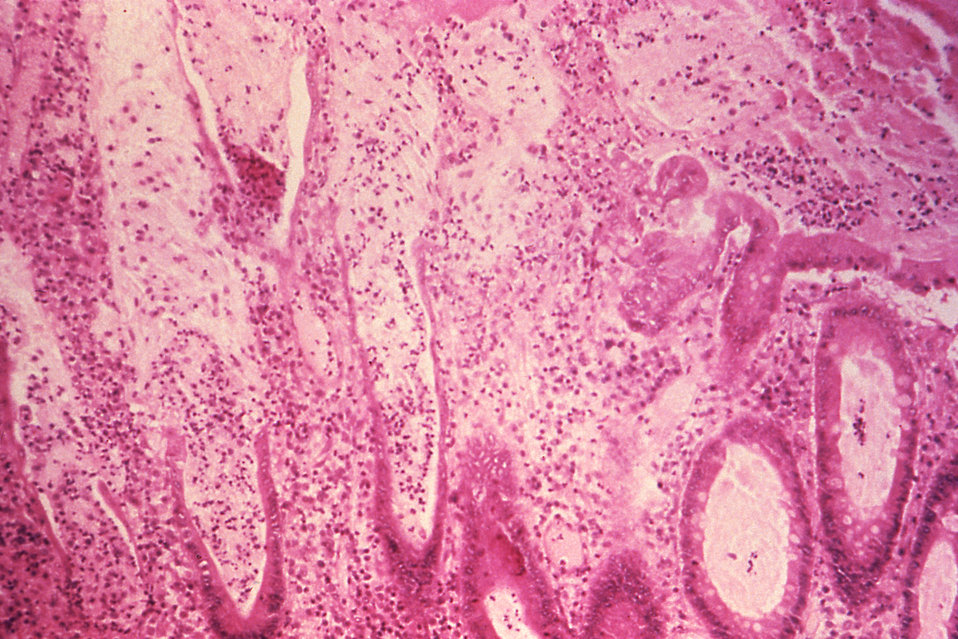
This hematoxylin-eosin-stained (H&E) photomicrograph of a colonic mucosa specimen revealed some of the ultrastructural changes brought on by a generalized inflammatory reaction including mucosal glands that were filled with mucin and inflammatory cells.